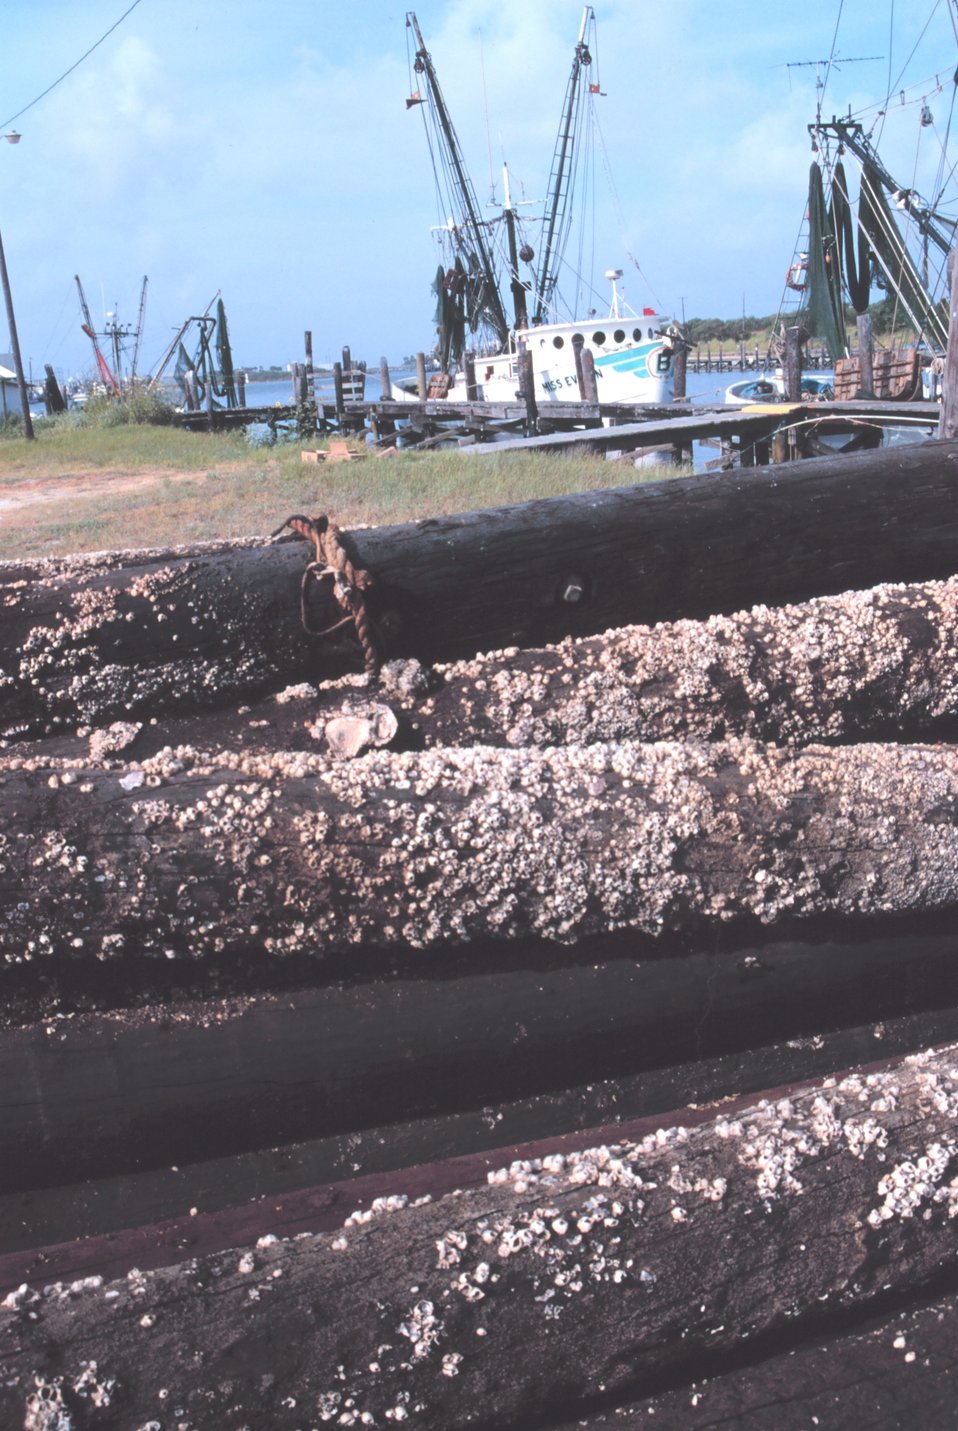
Shrimp boats viewed over old barnacle-encrusted pilings at Conn Brown Harbor